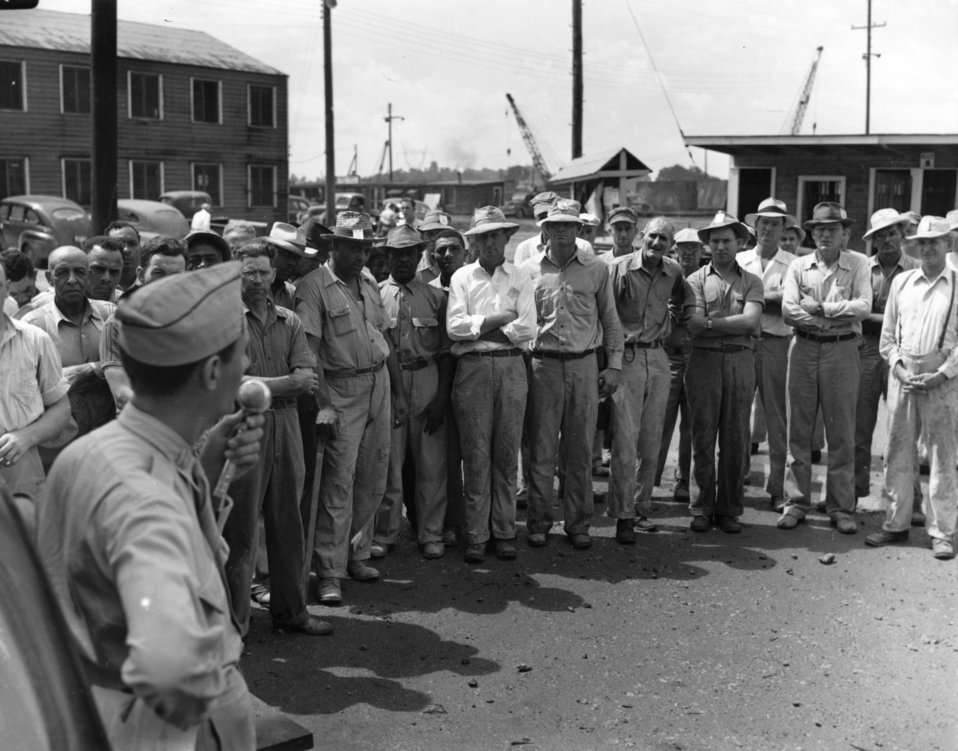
Army Activity at Oak Ridge